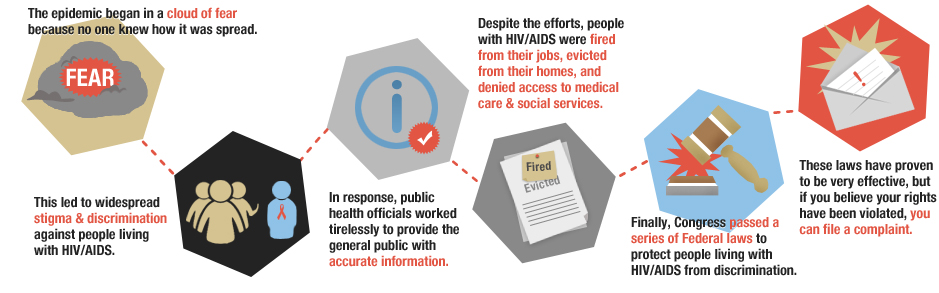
legal